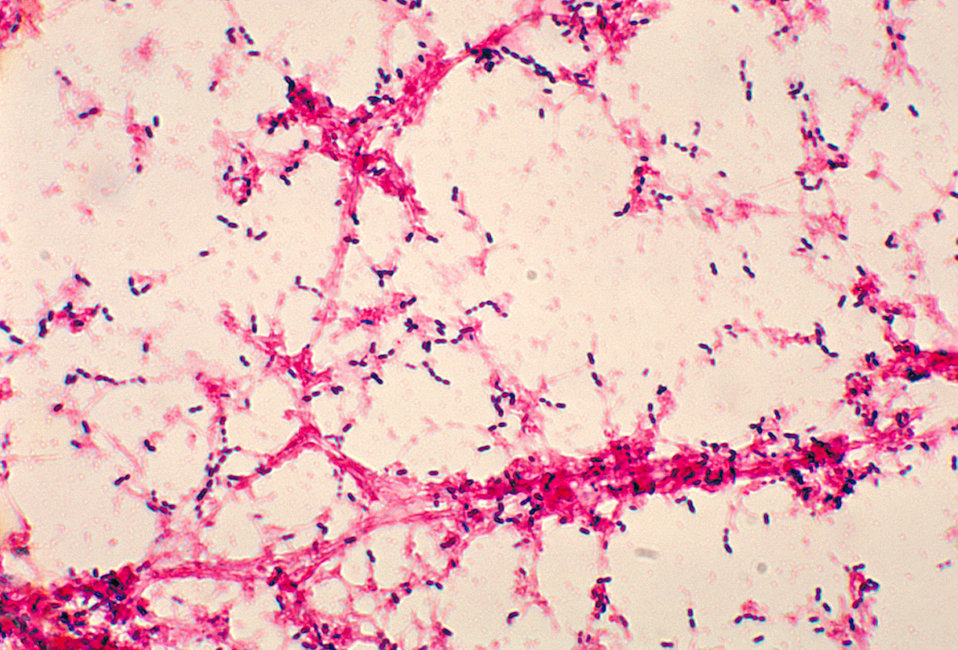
This is a photomicrograph of Streptococcus pneumoniae bacteria having been grown from a blood culture.